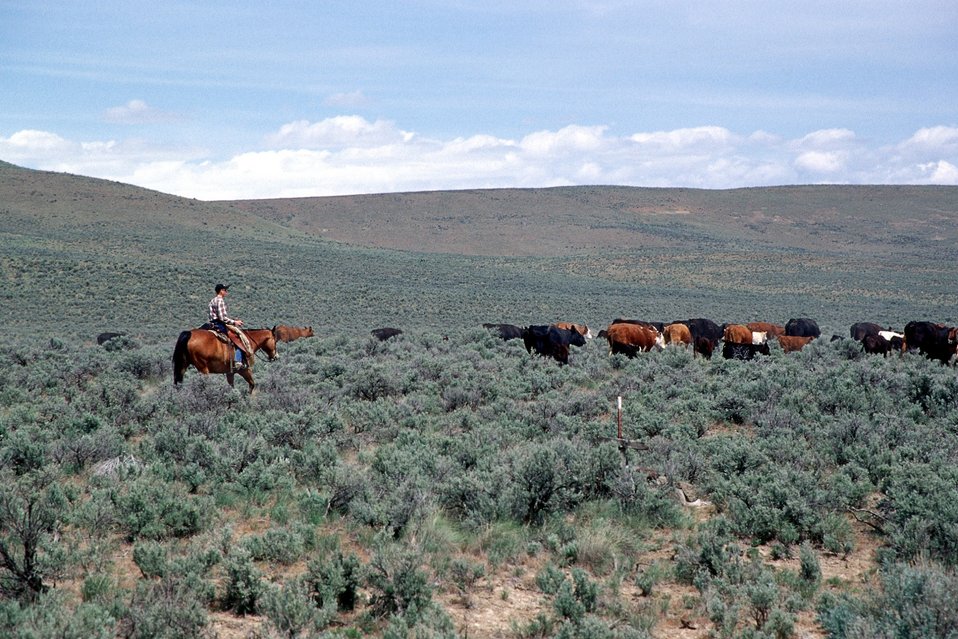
Immigrant Flats, Baker City RA. Man on horseback, herding cattle.